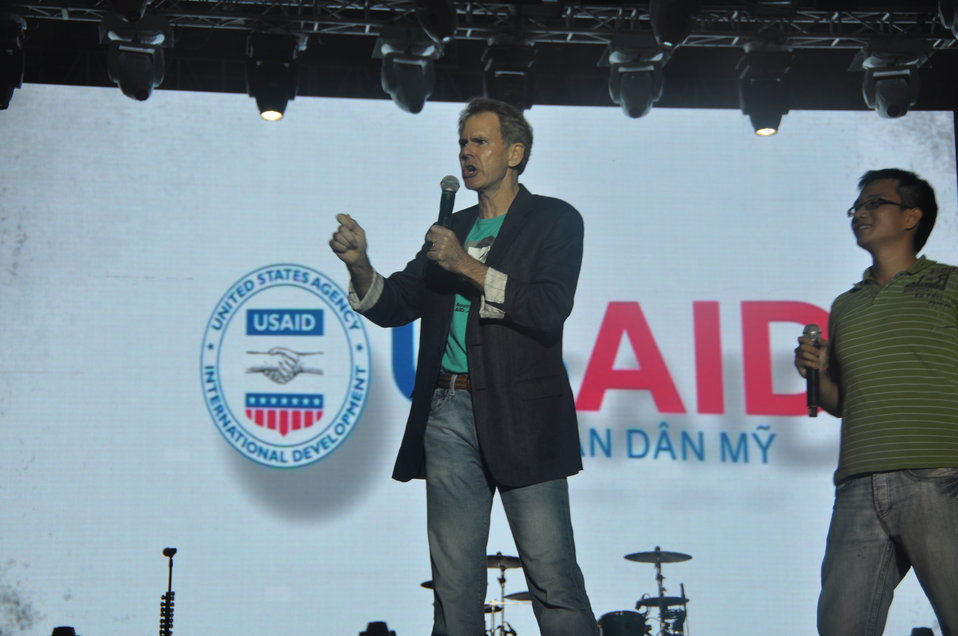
U.S. Ambassador to ASEAN, David L. Carden, challenges youth to 'stay angry and stay young' by fighting human trafficking

USAID co-sponsors MTV EXIT concert, campaign against human trafficking